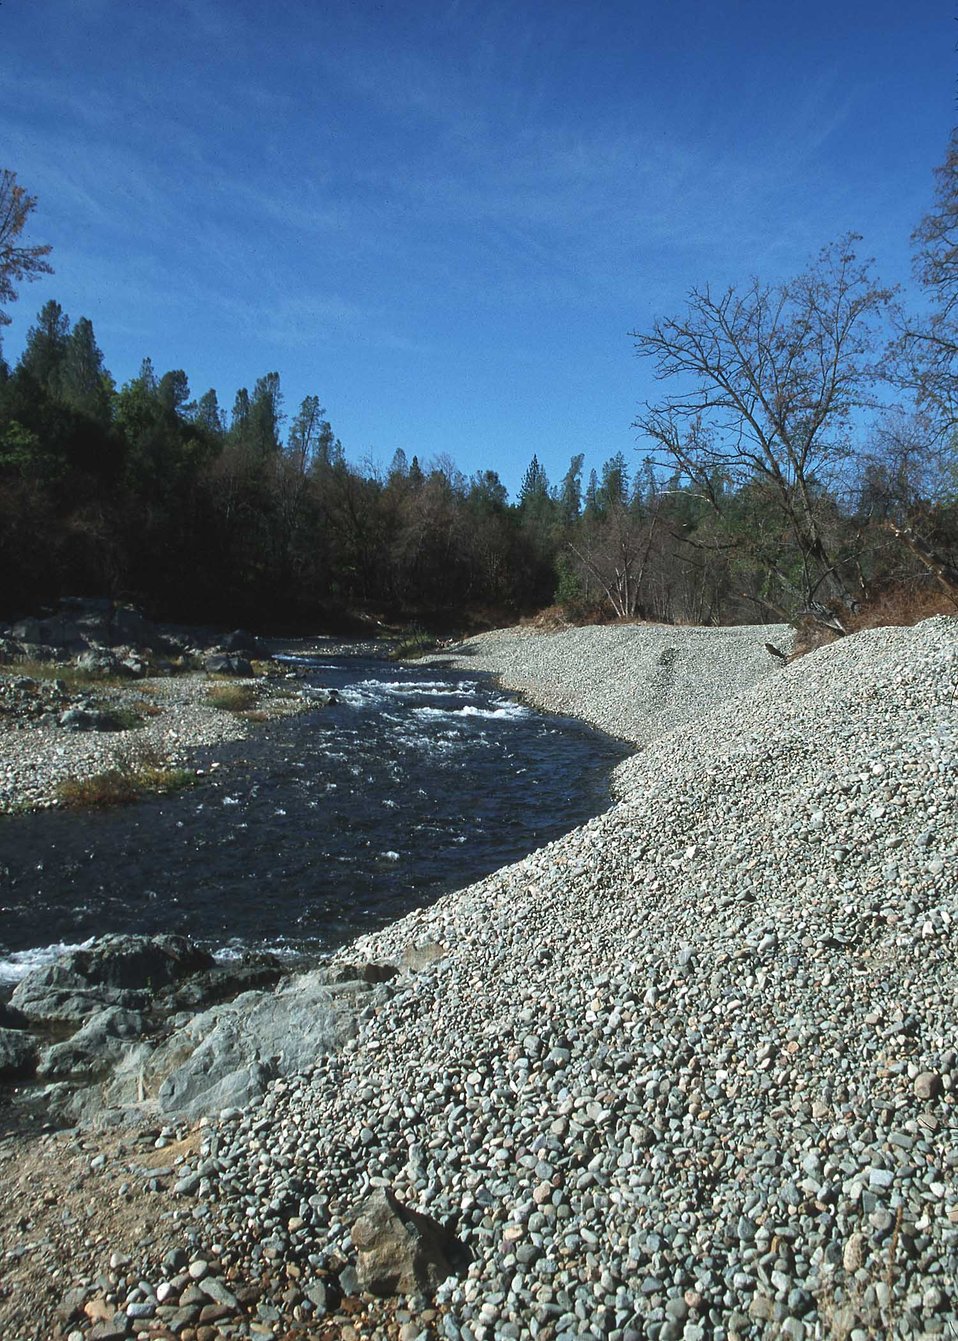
Gravel pile injection near old dam site.